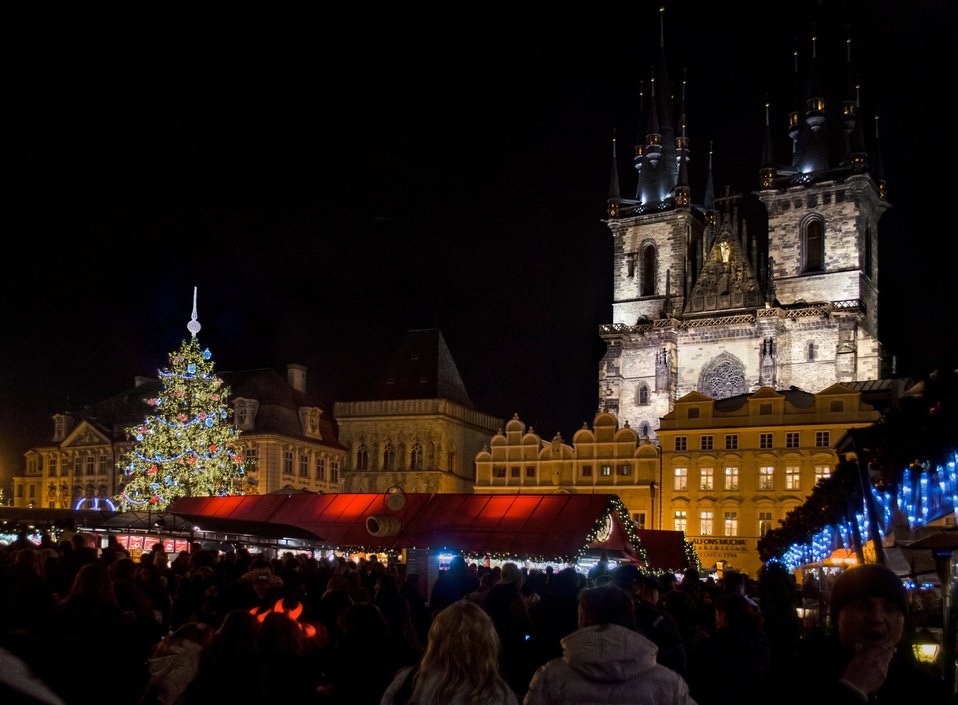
Prague - christmas tree at night

Christmas tree at night at the old town square - prague.